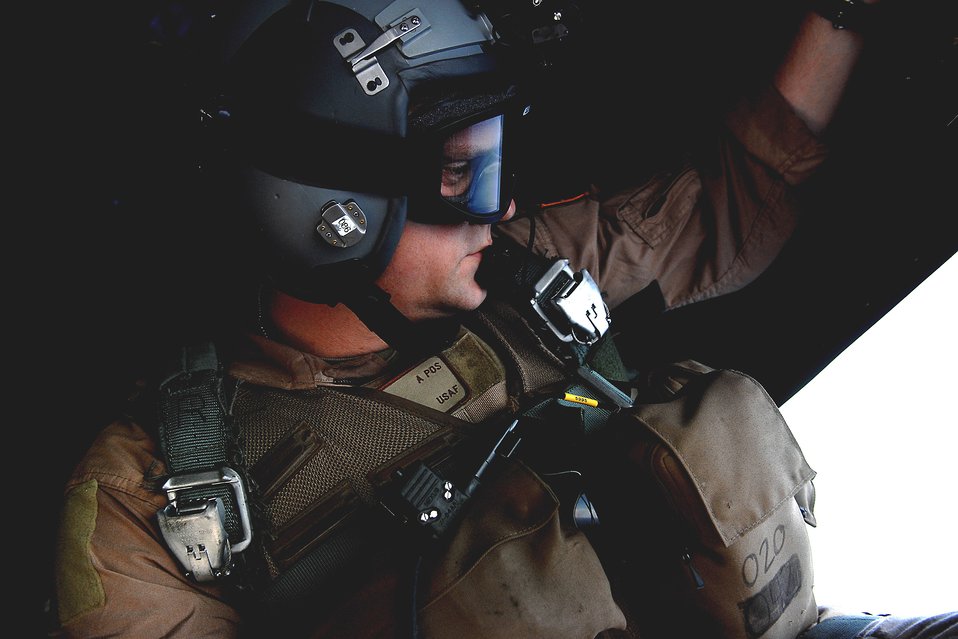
Djibouti Mission

Tech. Sgt. James Floyd watches a smoke grenade June 3 from the back ramp an HC-130 Hercules during a mission off the coast of Djibouti. Sergeant Floyd is deployed to Combined Joint Task Force-Horn of Africa out of Camp Lemonier, Djibouti. The loadmaster is from the 71st Search and Rescue Squadron at Moody Air Force Base, Ga.